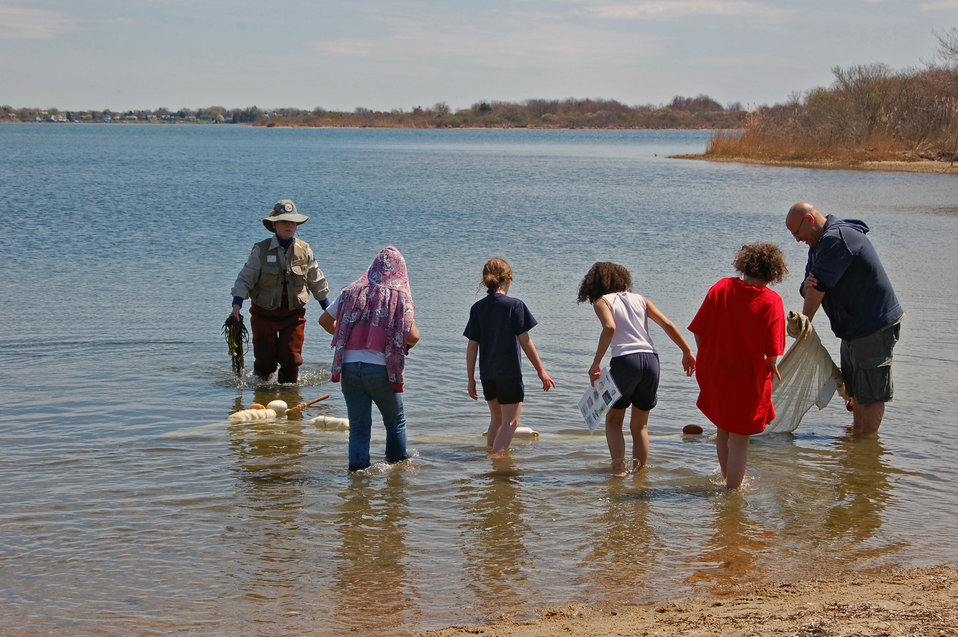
Environmental education

Ninigret National Wildlife Refuge, RI.